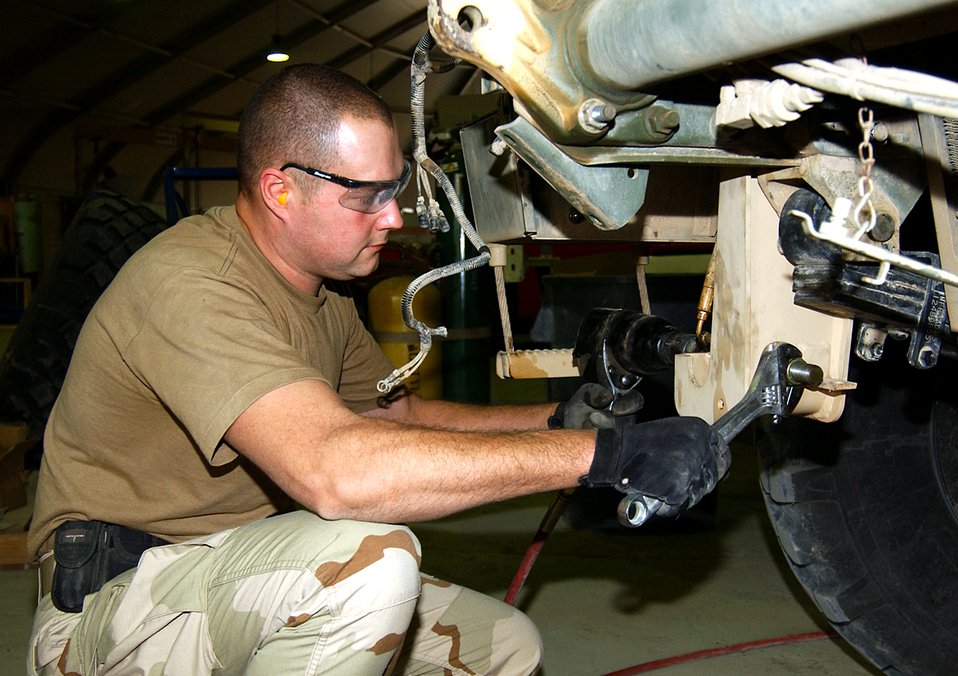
Armor Airmen

BALAD AIR BASE, Iraq (AFPN) -- Staff Sgt. Jeffrey Arnett installs a heavy duty raising cylinder on a truck. The cylinder helps support the weight of the newly installed armor. Sergeant Arnett is with the 732nd Expeditionary Logistics Readiness Squadron.